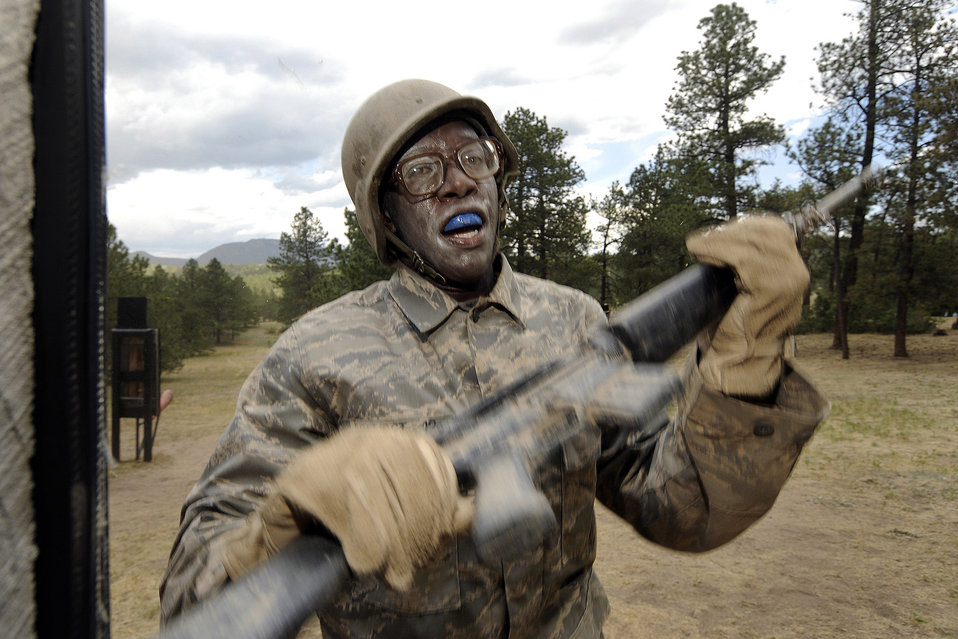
Assault course

U.S. Air Force Academy basic cadet Michael Provost runs the assault course during basic cadet training in the Jacks Valley training area July 25.